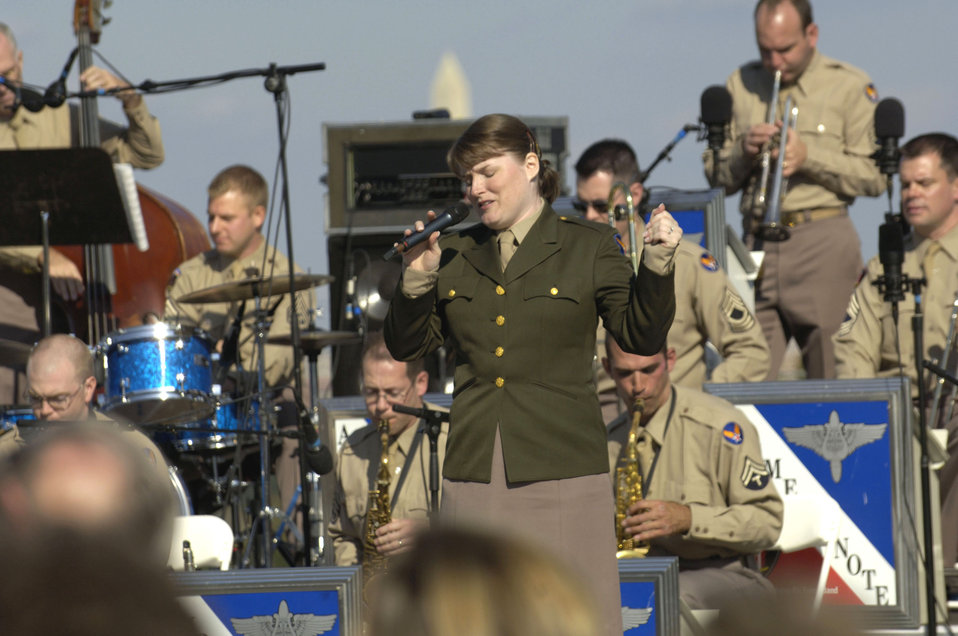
Airmen of Note at memorial

Tech. Sgt. Paige Martin sings a ballad during a concert by the U.S. Air Force Band's Airmen of Note held at the new Air Force Memorial in Arlington, Va., Oct. 21. This was the band's first official concert at the new memorial.